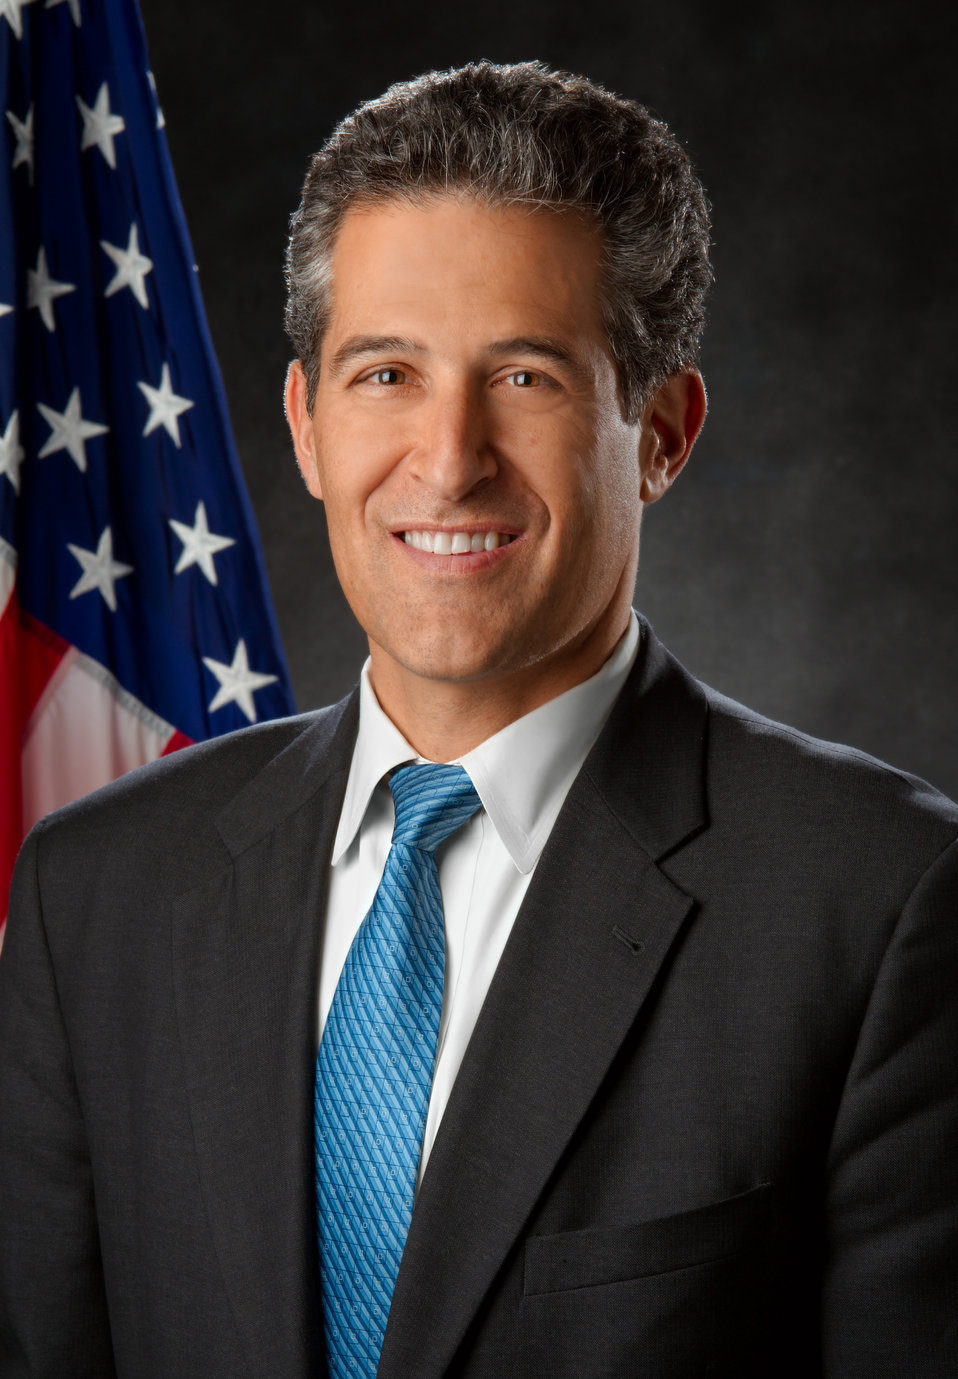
This 2008 photograph depicts Richard E. Besser, M.D., currently, an ABC News Medical editor. Formerly, Dr. Besser was the acting director for the Centers for Disease Control and Prevention (CDC), and the acting administrator for the Agency for Toxic Substances and Disease Registry (ATSDR). Prior to his position as the Acting CDC Director, Dr. Besser held the position of Director of the Coordinating Office for Terrorism Preparedness and Emergency Response.